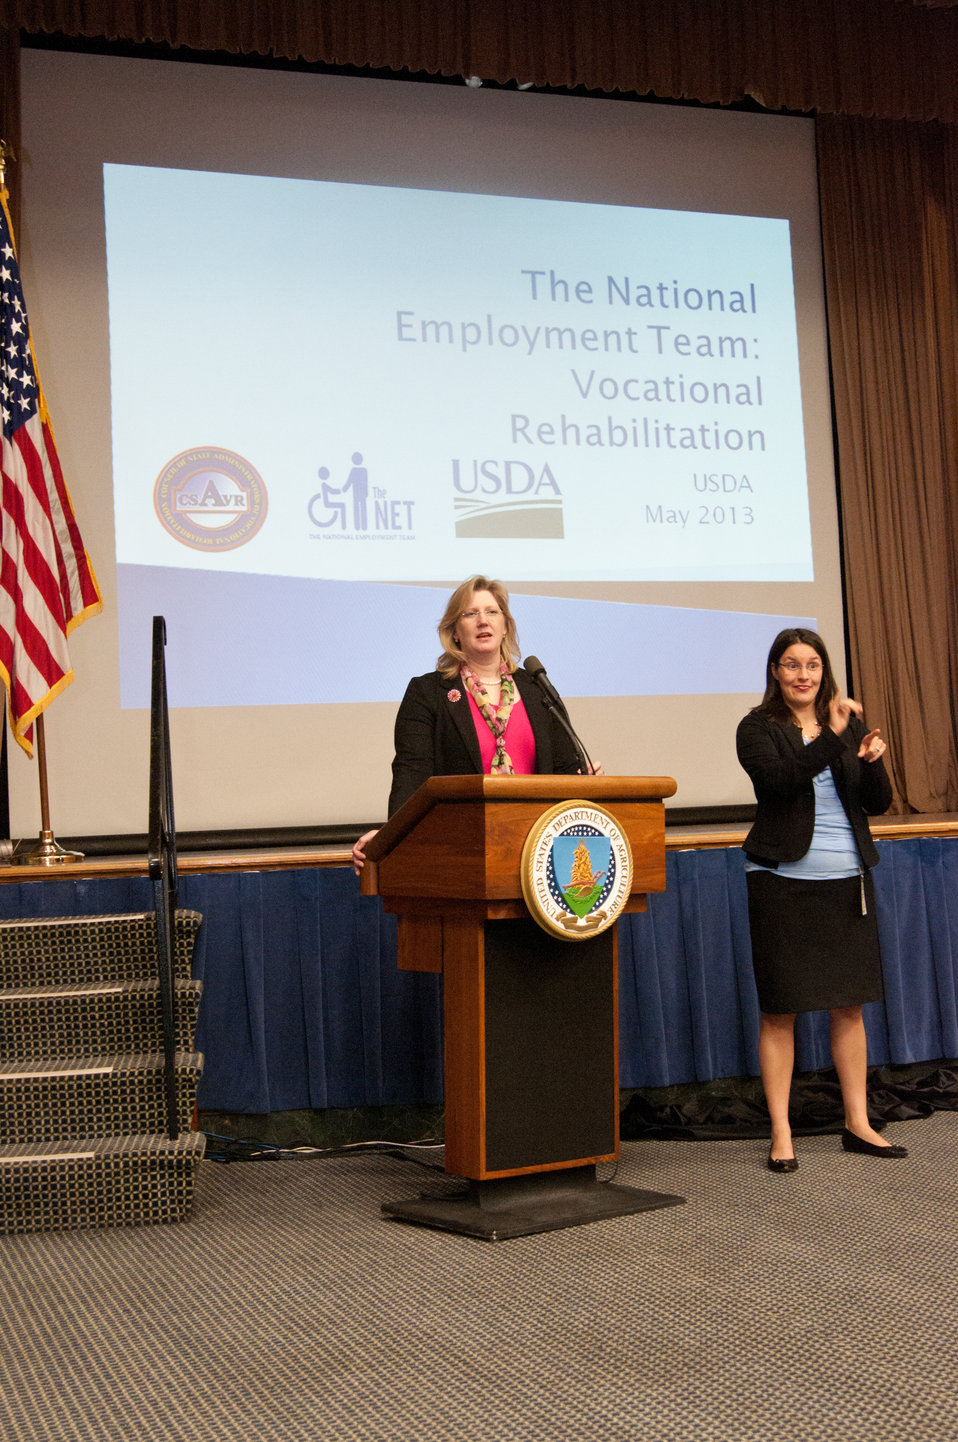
U.S. Department of Agriculture (USDA) Office of Human Resources Management (OHRM) Disability Employment Program Manager Alison Levy discusses recruitment and hiring of people with disabilities: policies, procedures and best practices at USDA’s OHRM Disability Employment Program Team Training at USDA in Washington, D.C. on Tuesday, May 14, 2013. Susie Needham interprets for hearing-impaired employees during the event.